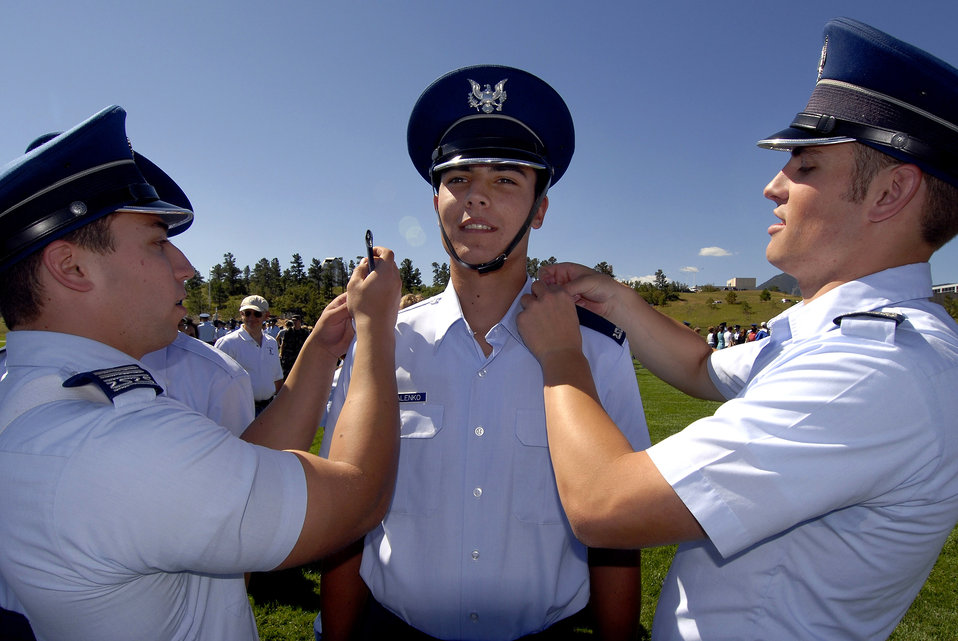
Acceptance Parade for Class of 2011

U.S. Air Force Academy Cadet 4th Class Vladimir Kovalenko receives his shoulder boards at the conclusion of the Acceptance Parade Aug. 8 at the Academy in Colorado Springs, Colo. The Acceptance Parade marks the formal acceptance of the new cadets into the cadet wing.